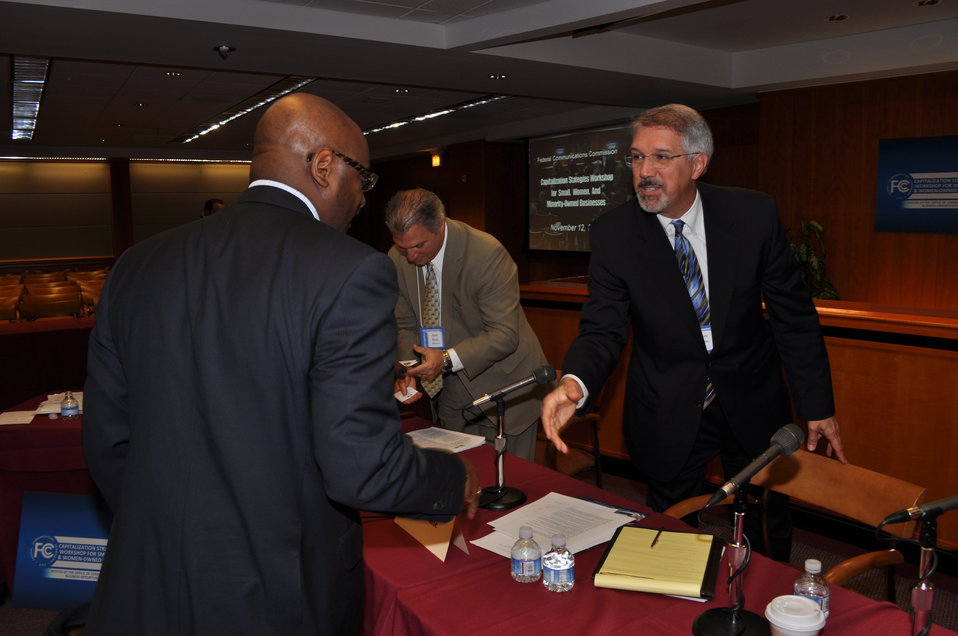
Capitalization Strategies

Workshop for small, minority and women owned businesses. Hosted by the Office of Communications Business Opportunities